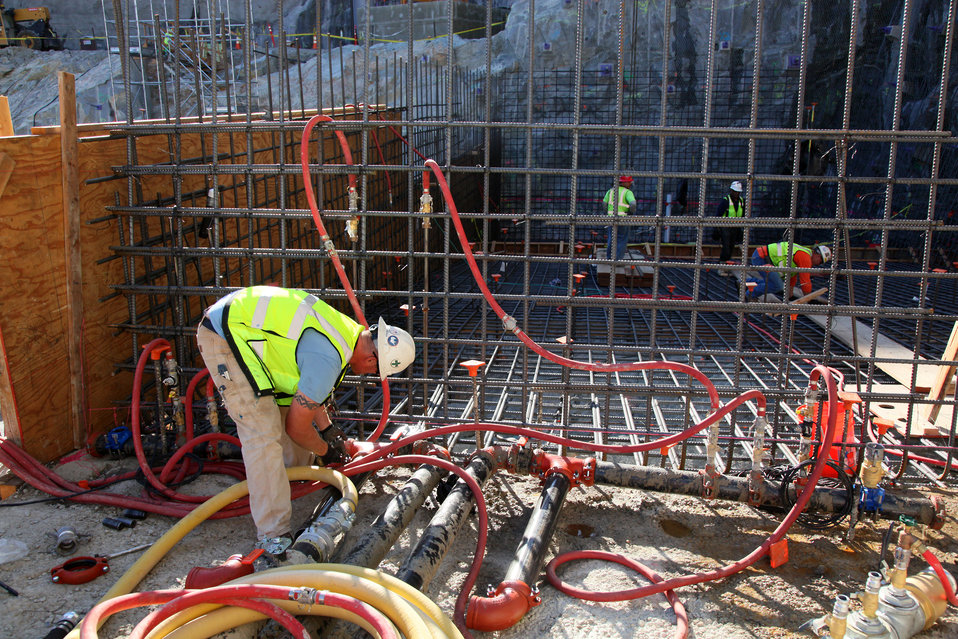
Preparations for concrete placement at the Folsom auxiliary spillway

A contractor for the U.S. Army Corps of Engineers Sacramento District checks water lines in preparation for concrete placement for the auxiliary spillway control structure at the Folsom Dam in Folsom, Calif., May 30, 2012. Water in cooling tubes will aid in curing the concrete. The spillway project is part of the Folsom Dam Joint Federal Project, a joint effort of the Corps, U. S. Bureau of Reclamation, the Central Valley Flood Protection Board and the Sacramento Area Flood Control Agency to improve the safety of the current dam and reduce flood risk for the greater Sacramento area.